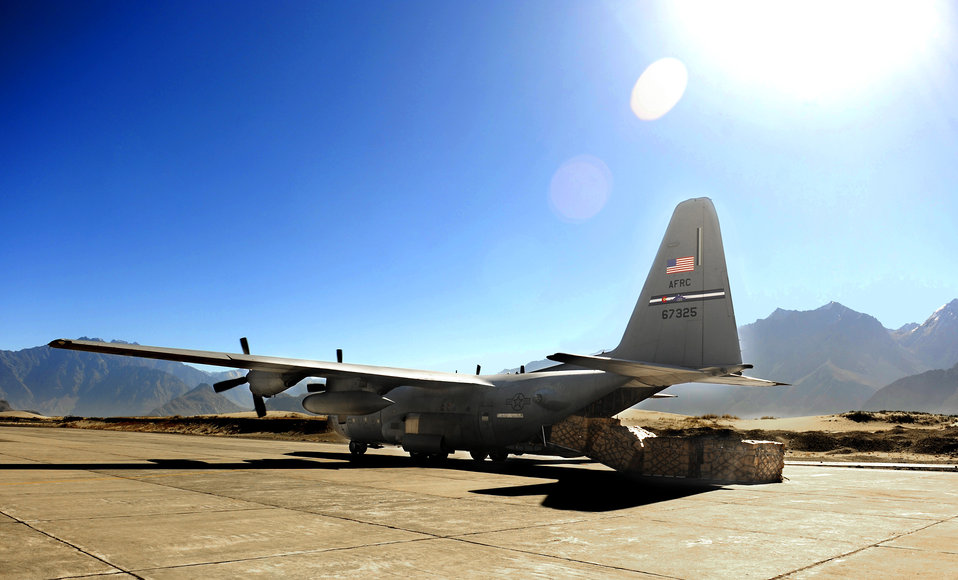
Flood relief

A U.S. Air Force C-130 Hercules aircrew performs a rolling offload of relief supplies at Skardu Airfield, Pakistan, recently. U.S. military aircrews, working in close coordination with the Pakistan military, have transported more than 6.6 million kilograms of relief supplies and evacuated 21,000 people in the flood-affected regions of Pakistan during August and September.